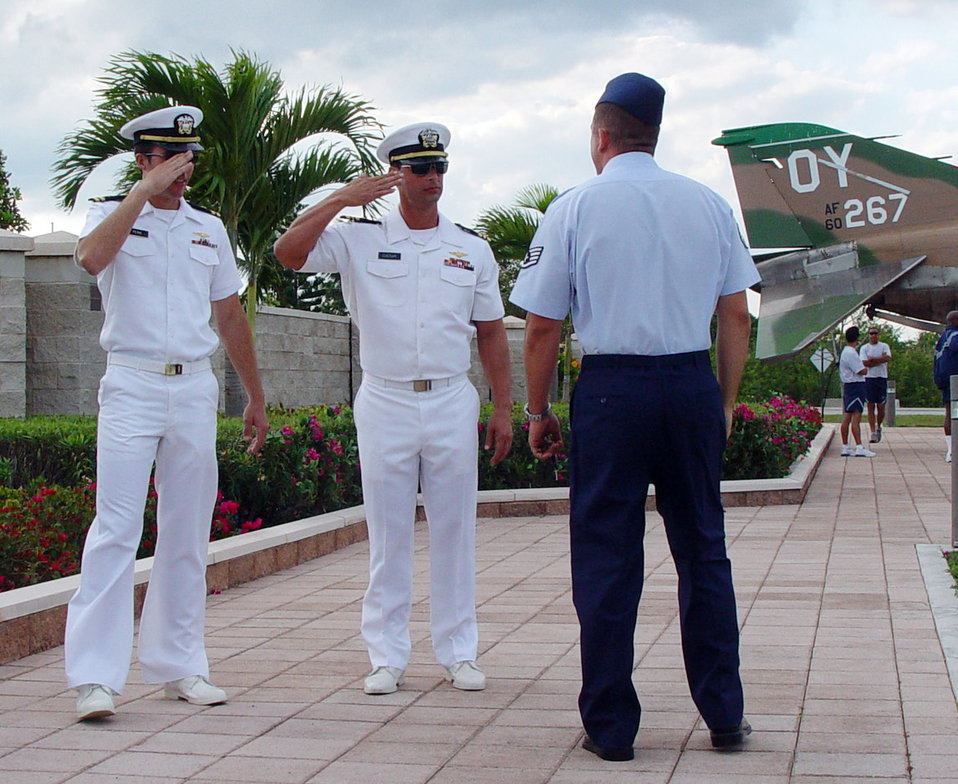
Air Force Reserve goes Hollywood

A staff sergeant teaches two actors from the